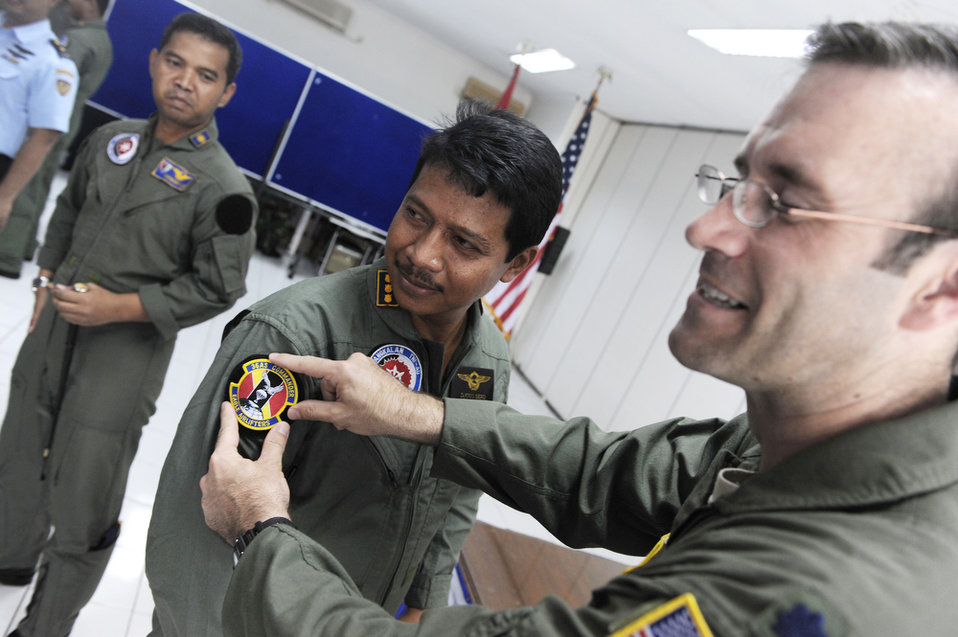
Cope West 2010

Indonesian air force Col. Djoko Senoputro (center) exchanges squadron patches with Lt. Col Dave Kincaid at the closing ceremony of Exercise Cope West 10 April 23, 2010, at Halim Air Base, Indonesia. Colonel Senoputro is the Halim AB commander. Colonel Kincaid is the 36th Airlift Squadron commander.